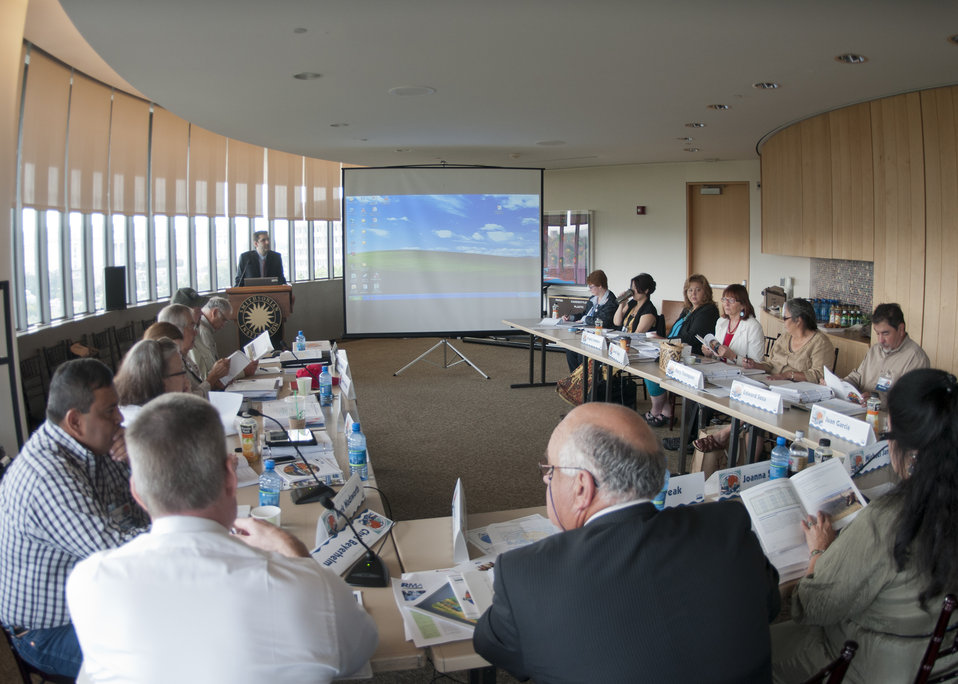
U.S. Department of Agriculture's (USDA) Council for Native American Farming and Ranching (CNAFR) concludes its first meeting at the National Museum of the American Indian in Washington, D.C., on Wednesday, Aug. 15, 2012. CNAFR was created to advise the Secretary on ways to eliminate barriers to participation for Native American Farmers and Ranchers in USDA programs. The Council was established as part of the Keepseagle settlement, and is conducted under the oversight of USDA's Office of Tribal Relations under the Office of the Secretary of Agriculture.